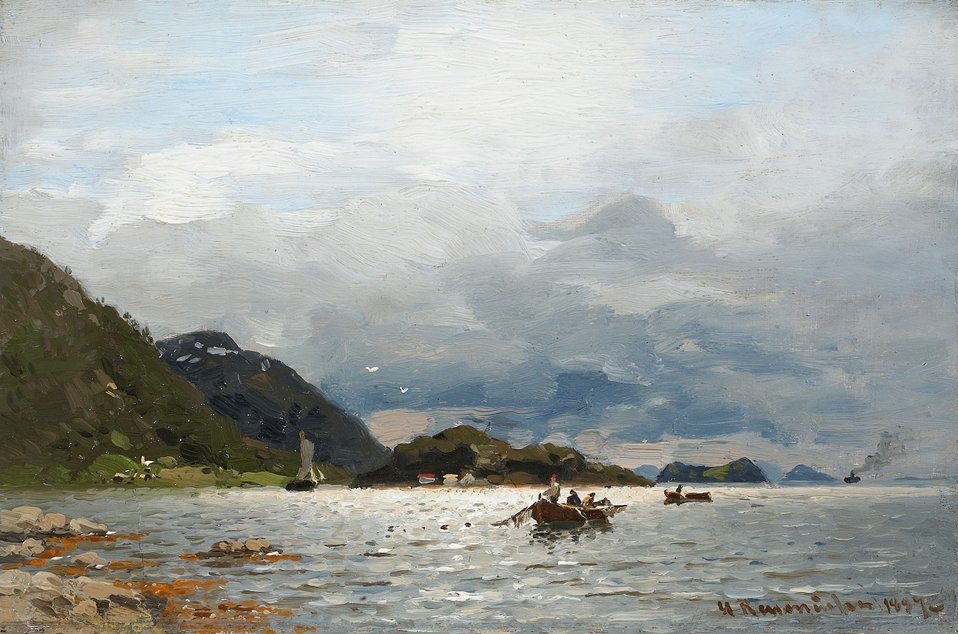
Georg Anton Rasmussen Küstenlandschaft